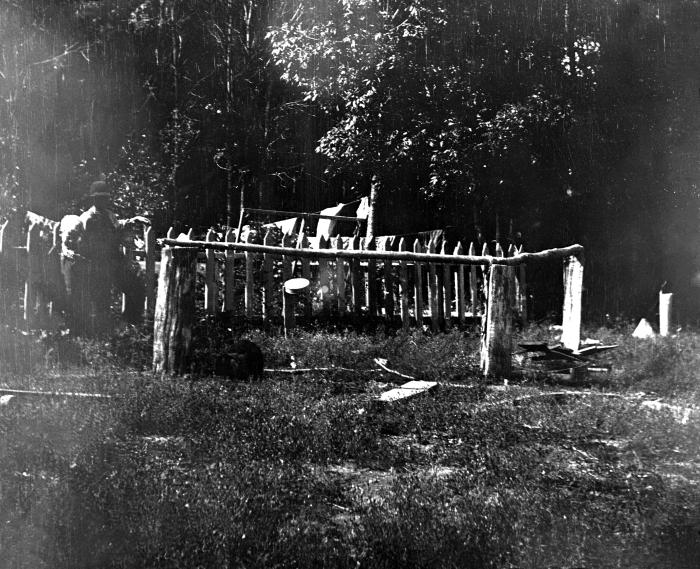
This is a 1909 photograph depicting an improperly constructed 'bored' well on the grounds of a Minnesota farm home. This is one of a series of instructional photos used by the Minnesota Board of Health to train public health workers. The focus of the images and the training effort was on protecting water supplies from bacterial contamination.